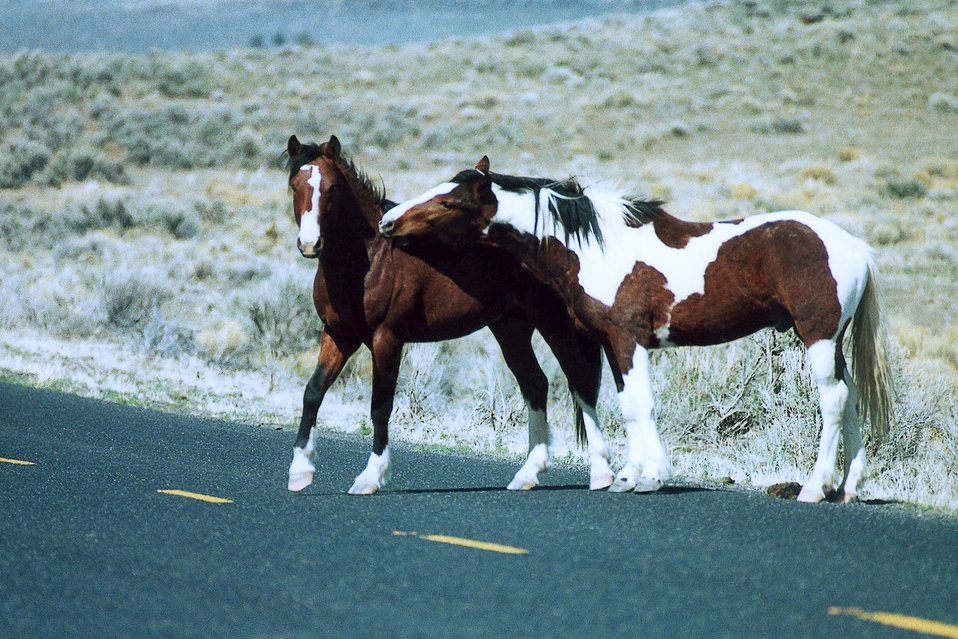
Two wild bachelor stallions crossing Oregon State Road 205.